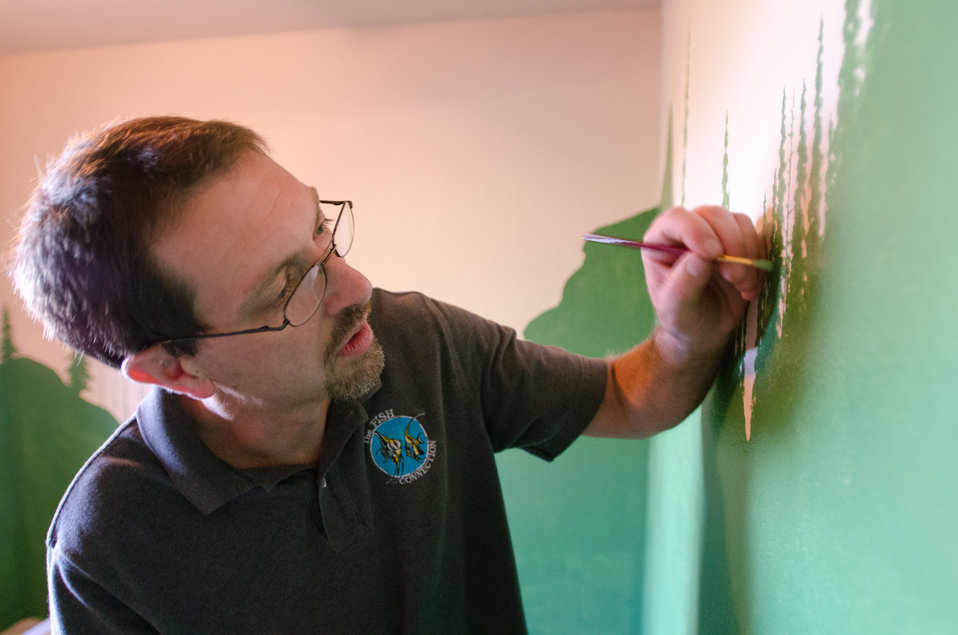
Colorado native and business owner Bruce Longwell paints a tree on his son’s bedroom wall, in his Durango, CO home on July 17, 2012. Mr. Longwell financed the single-family house with a U.S. Department of Agriculture (USDA) Rural Development (RD) Housing Assistance loan. This provided lower monthly payments than his prior rental home. Homeownership provides potential gains through home equity.